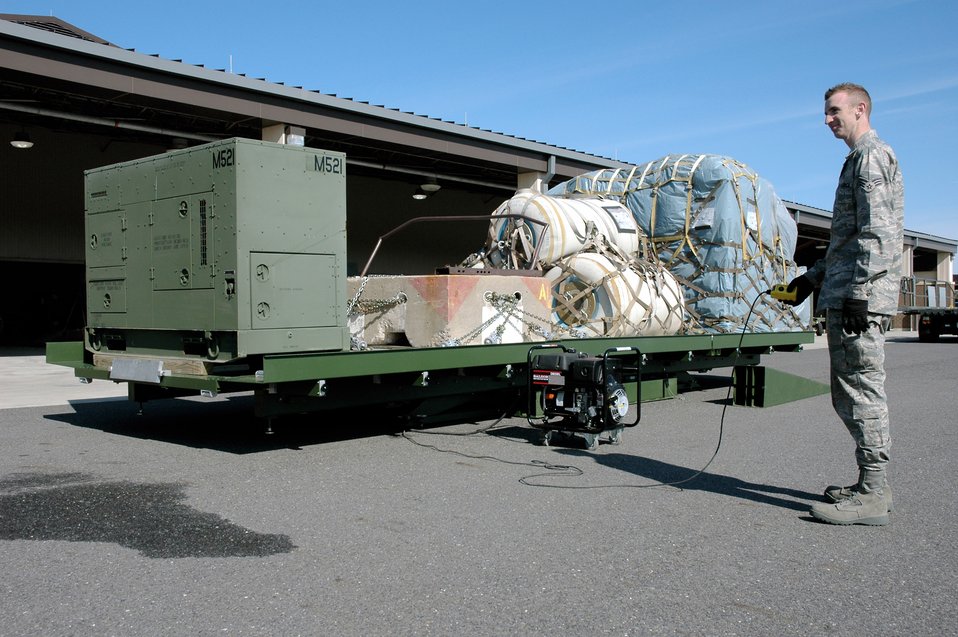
New hydraulic lift aims to boost contingency capabilities

An Airman from the 816th Global Mobility Squadron at McGuire Air Force Base, N.J., uses a push-button control to test the deployable-hydraulic lift during a demonstration with the Air Mobility Battlelab. The AMB, located in the U.S. Air Force Expeditionary Center on Fort Dix, N.J., coordinated the demonstration as part of the Deployable-Hydraulic Lift Initiative which aims to help contingency response Airmen have an easier time moving cargo in deployed locations.